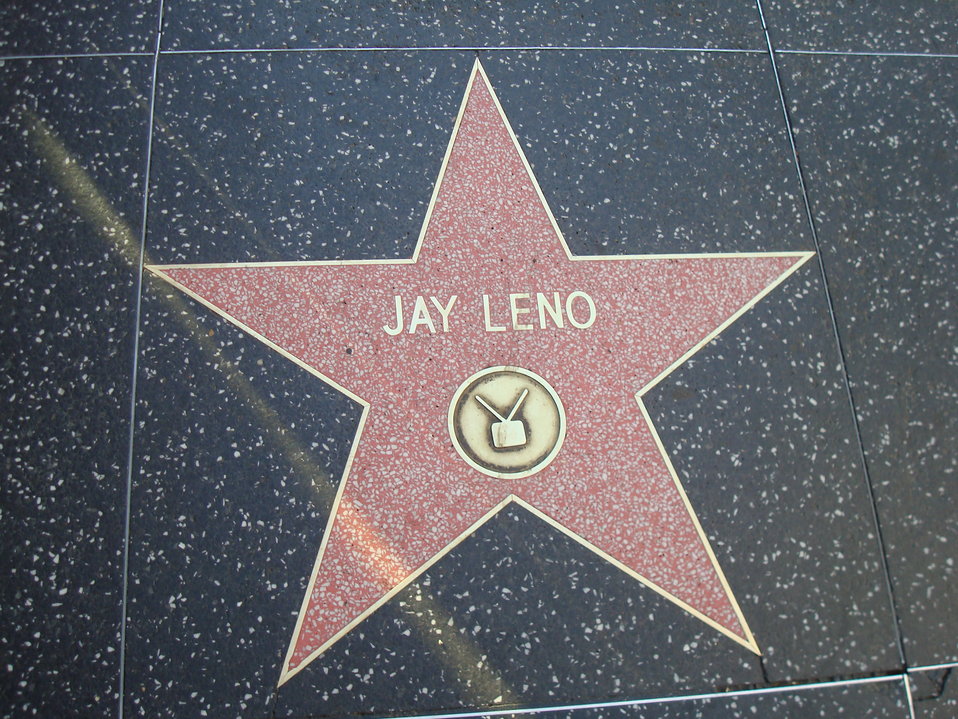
Jay Leno's star on the Hollywood Walk of Fame in Hollywood, Los Angeles, California.